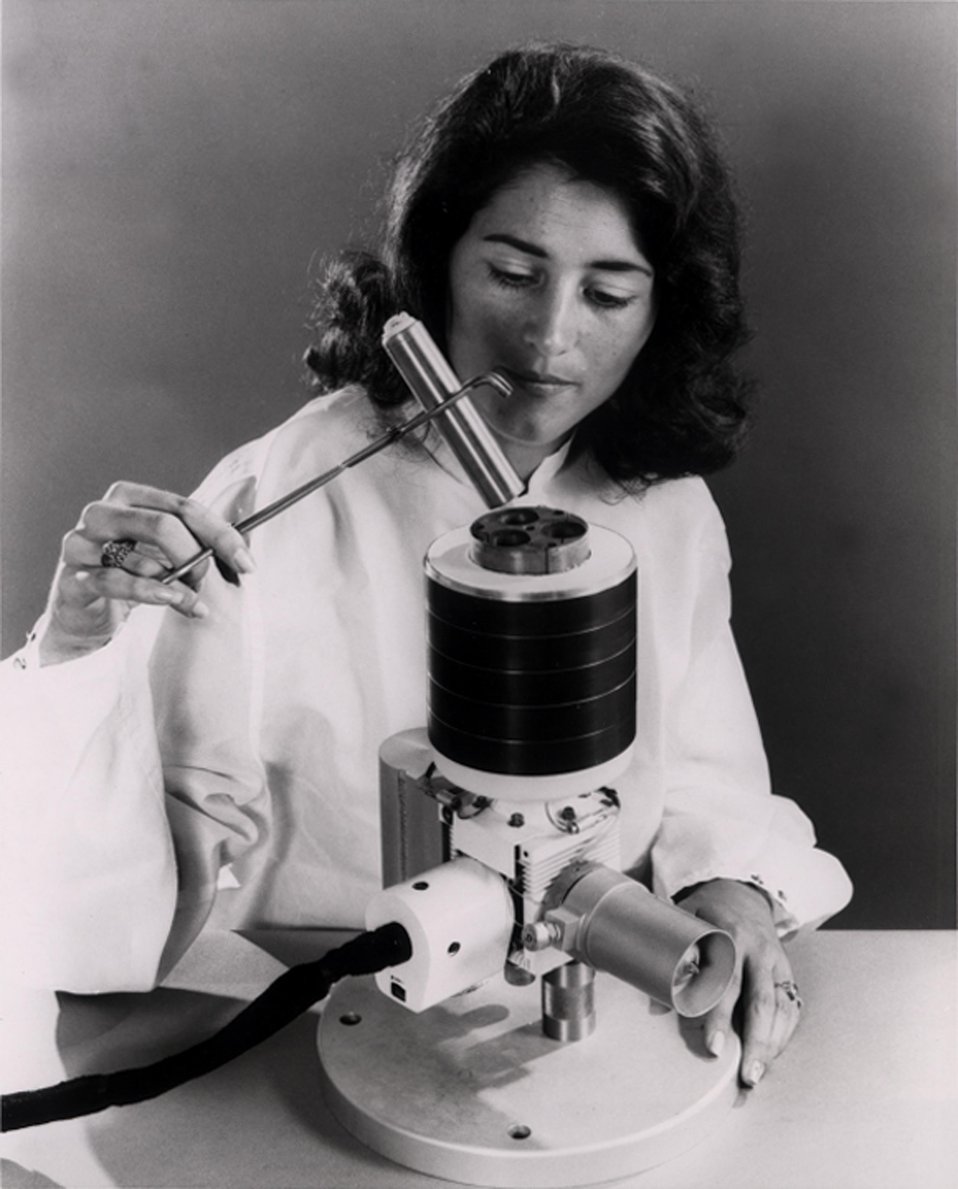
The first use of nuclear energy to operate a refrigeration unit demonstrated.